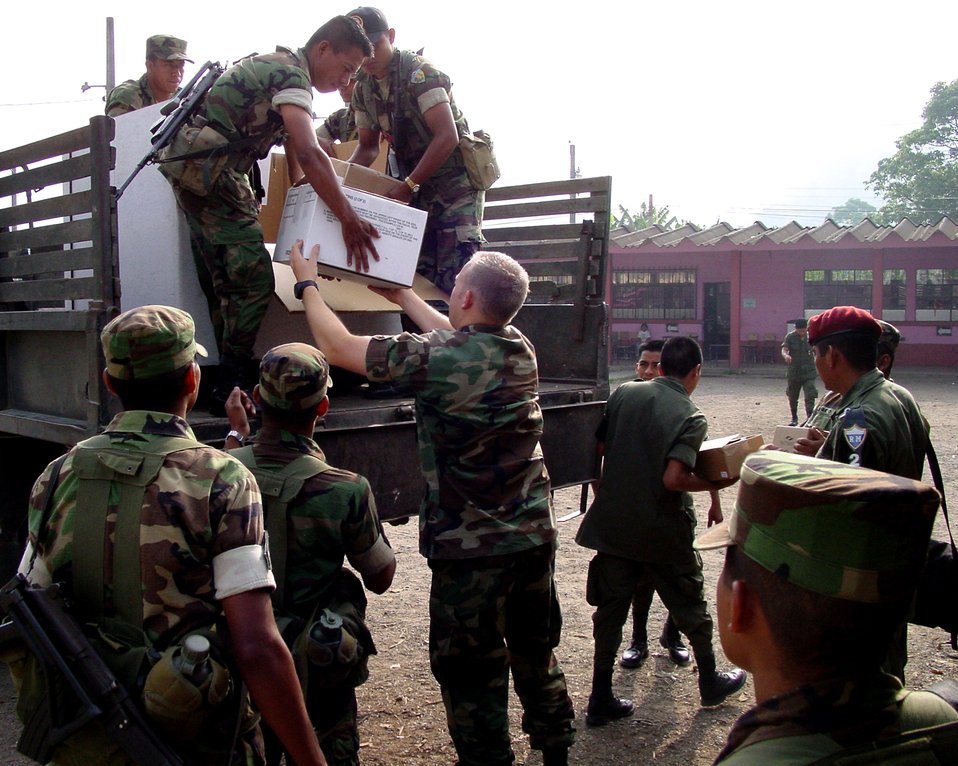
Air Force medics provide medical relief in Guatemala

Capt. (Dr.) Daniel Rohweder helps Guatemalan soldiers unload medical supplies during a humanitarian mission to some of the poorest regions of Guatemala. Captain Rohweder, a physician from Vandenberg Air Force Base, Calif., was one of 13 medical professionals from various Air Force Space Command bases deployed to the country. More than 8,000 patients during the 10-day mission in April.